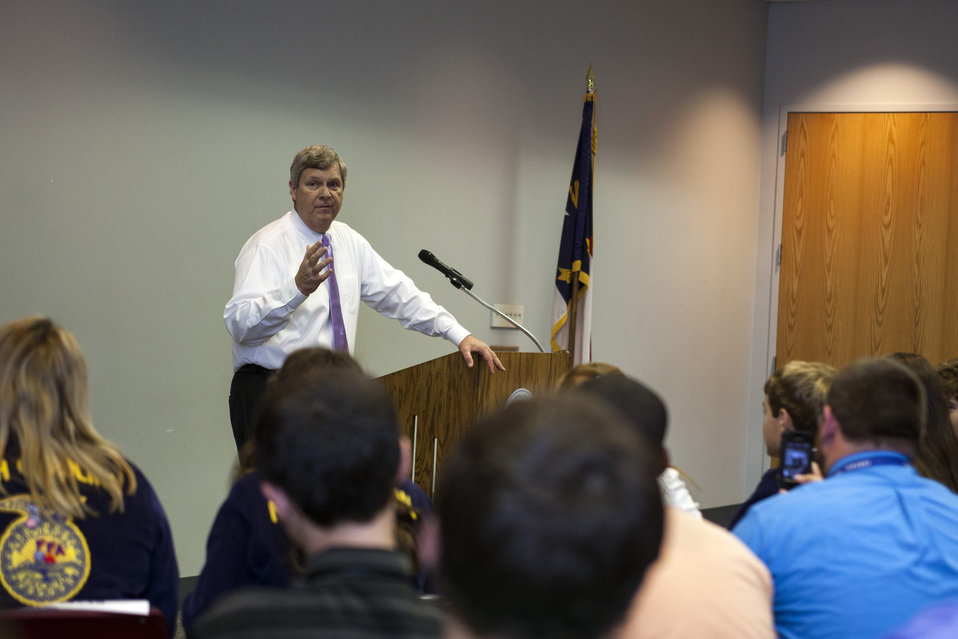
Agriculture Secretary Tom Vilsack speaks with students on the future of American agriculture at Northeast Regional School of Biotechnology and Agriscience in Plymouth, NC on Friday, Aug. 15, 2013.